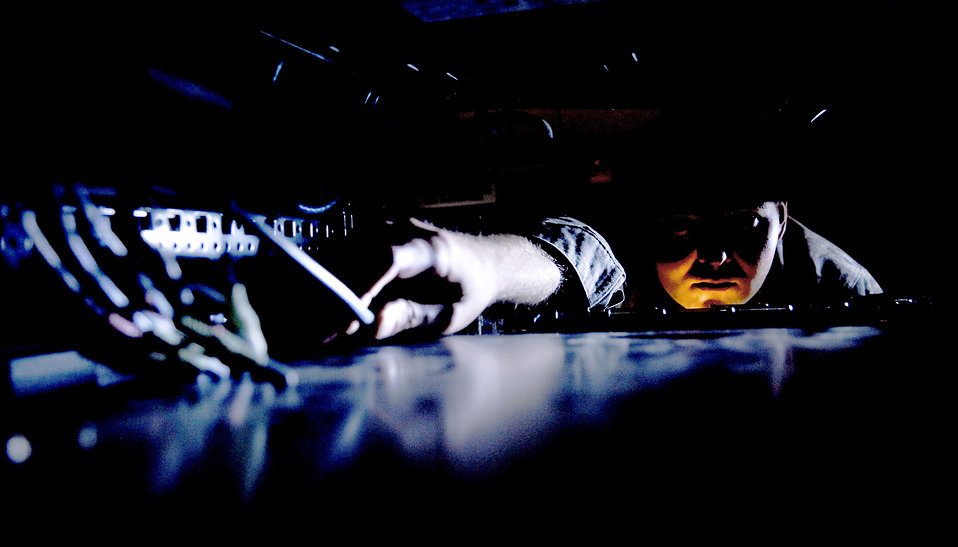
Getting the connection

Senior Airman Sam Remmel inspects a server connection April 28, 2010, at the network operations center on Joint Base Charleston, S.C. The NOC is responsible for the commander's access channel, public drives and all the basic connections throughout Joint Base Charleston. Airman Remmel is a NOC administrator with the 628th Communications Squadron.